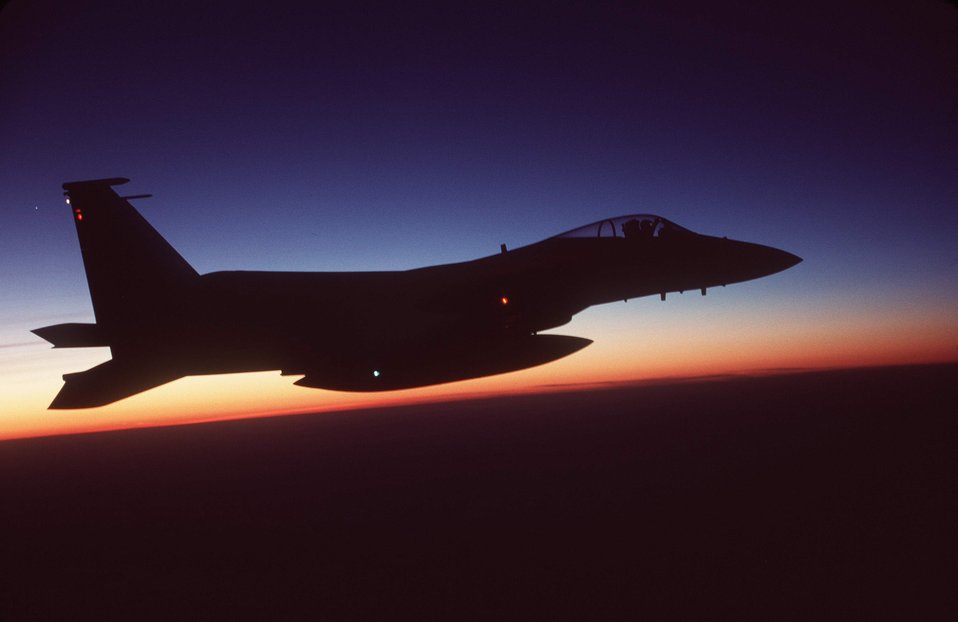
F-15C silhouette

OPERATION NOBLE EAGLE -- An F-15C Eagle from the 1st Fighter Wing at Langley Air Force, Va., is silhouetted against the horizon at sunrise while performing a combat air patrol mission along the East Coast of the United States in support of Operation Noble Eagle. Nearly as many Air Force active-duty, Guard and Reserves defend American skies in Operation Noble Eagle as are deployed for Operation Enduring Freedom.